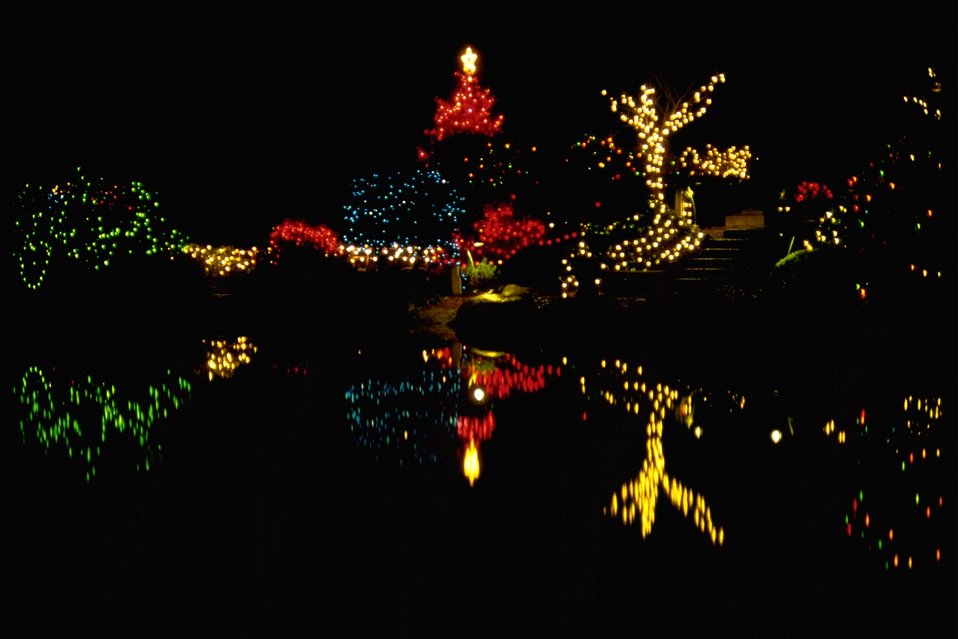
Christmas Lights at Shore Acres.